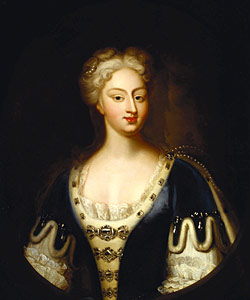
Seeman Caroline von Ansbach